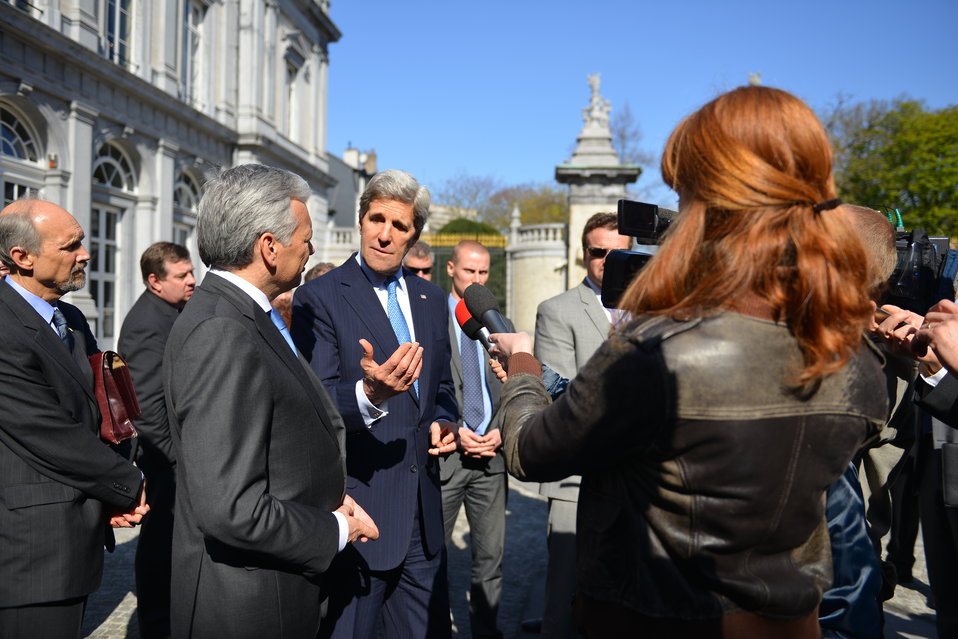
Secretary Kerry Takes Questions From Belgian TV with Belgian Minister Reynders

U.S. Secretary of State John Kerry takes questions from Belgian TV with Belgian Foreign Minister Didier Reynders at Egmont Palace in Brussels, Belgium, on April 24, 2013.